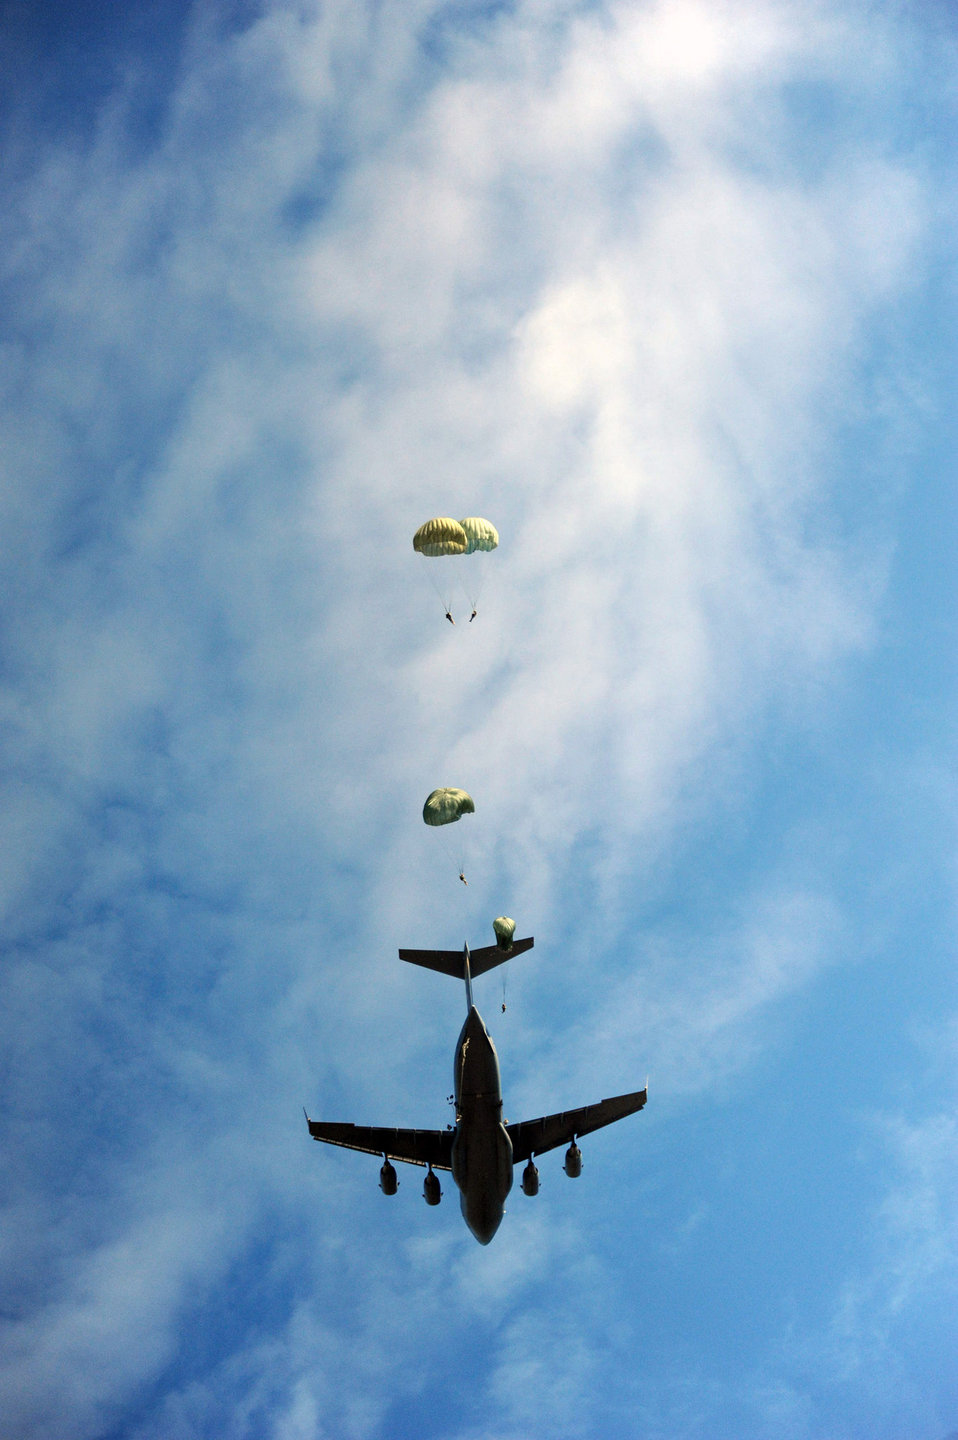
Drifting down

Paratroopers from the 507th Airborne School jump out of a C-17 Globemaster III Oct. 14, 2010, over Fort Benning, Ga. The C-17 is from the 535th Airlift Squadron at Joint Base Pearl Harbor-Hickam, Hawaii, and made the long journey to Fort Benning to support student jump requirements.